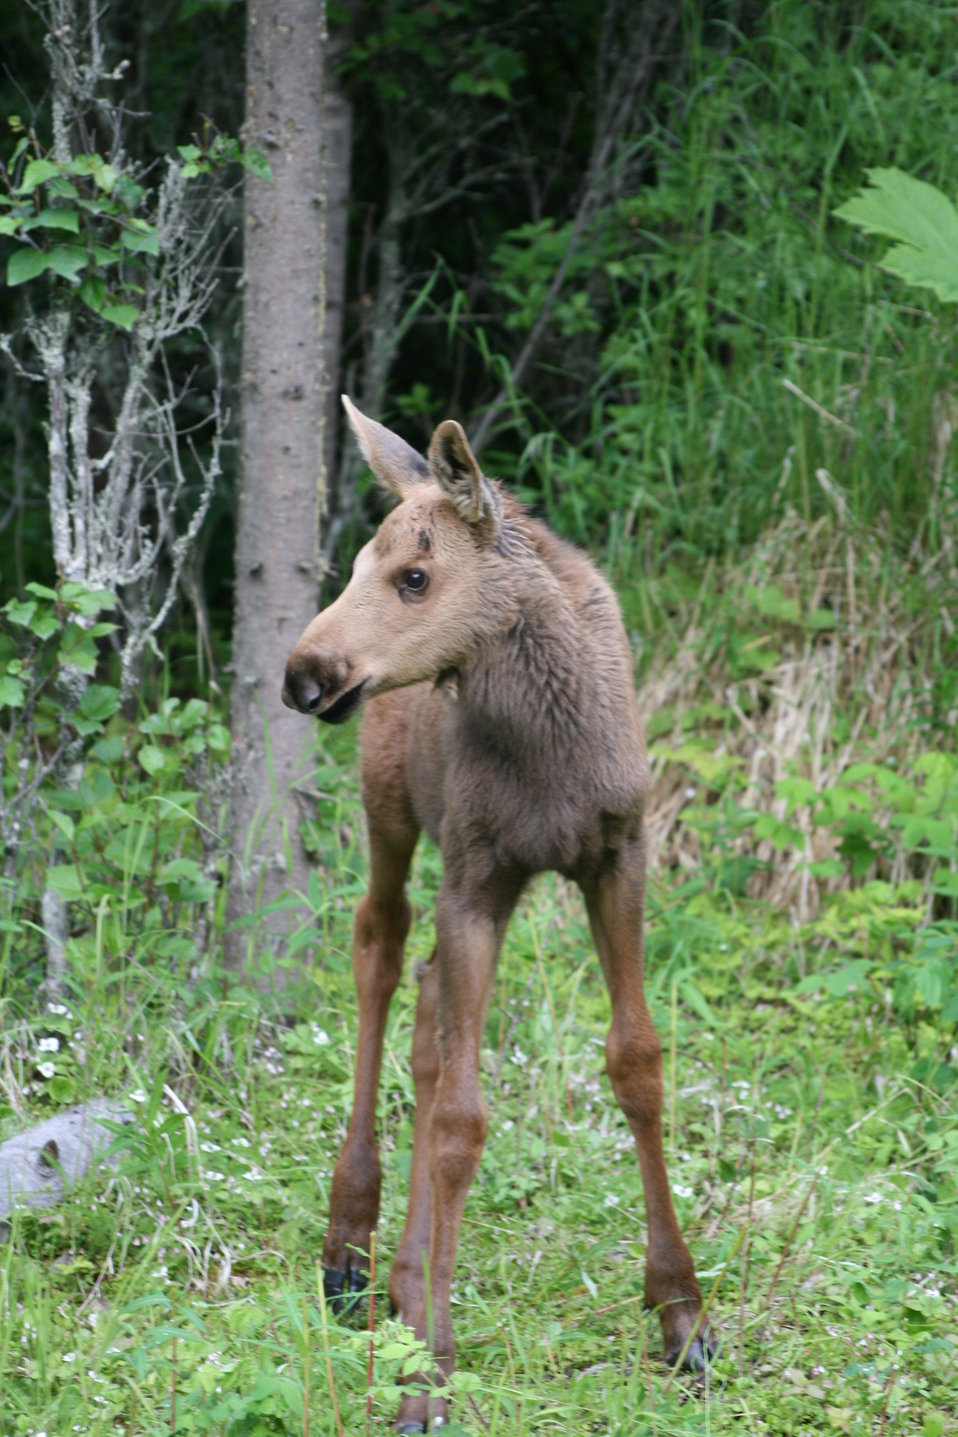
moose calf, Kenai National Wildlife Refuge, AK

Photo: Matthew Strausser, USFWS
2011 Wilderness Fellow